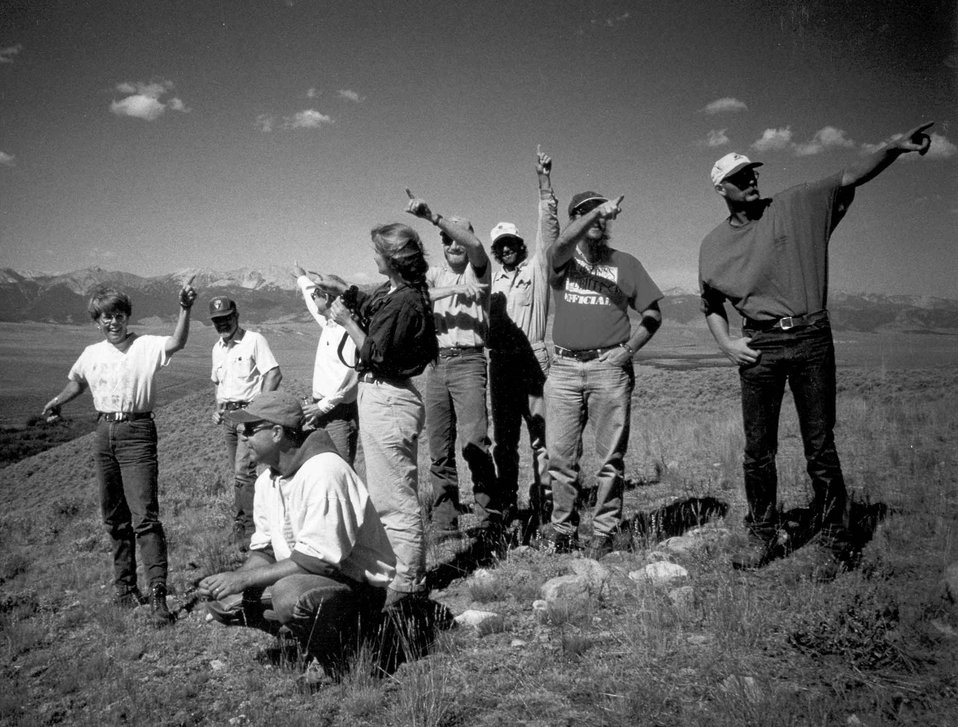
People Salmon Field Office UCSC Upper Columbia Salmon Clearwater District